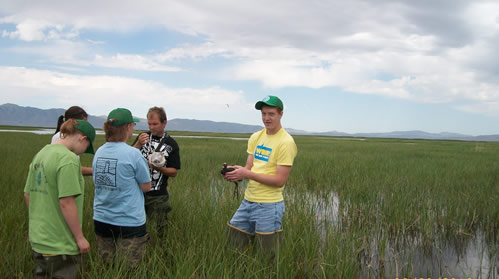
Bird Banding